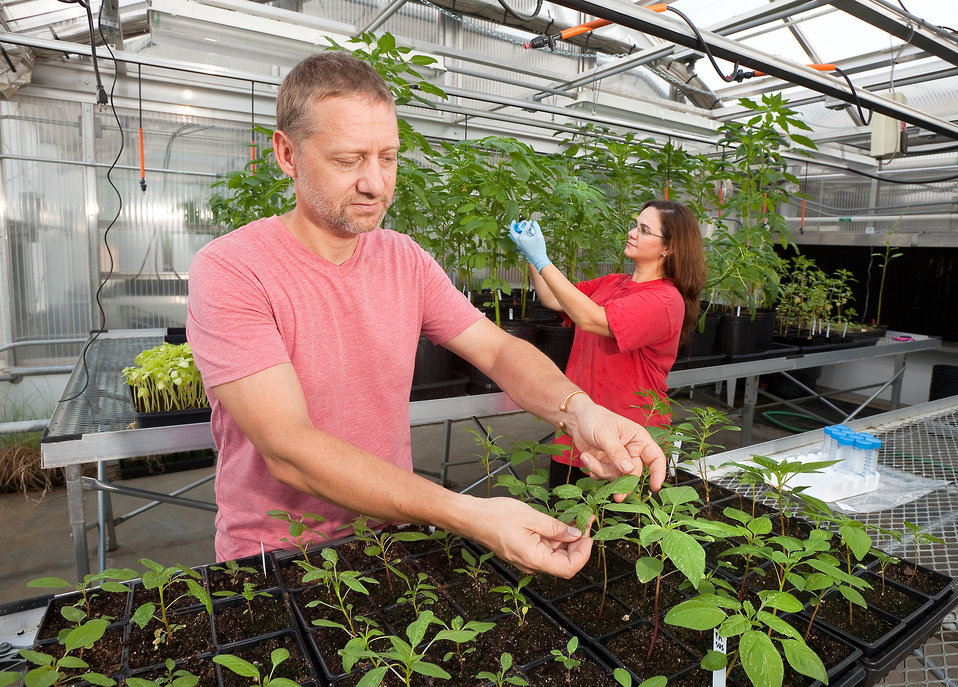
U.S. Department of Agriculture (USDA) Agricultural Research Service (ARS) plant physiologist Franck Dayan observes wild-type and herbicide-resistant biotypes of Palmer Amaranth (pigweed) as Mississippi State University graduate student, Daniela Ribeiro collects samples for DNA analysis at the ARS Natural Products Utilization Research Unit in Oxford, MS on July 20, 2011.